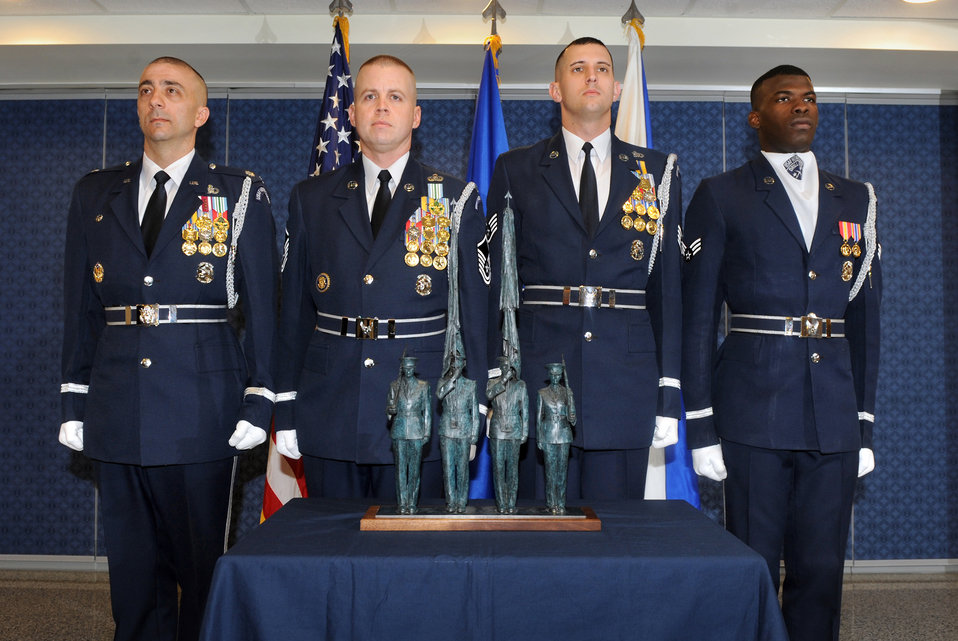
CSAF accepts honor guard statue

U.S. Air Force Honor Guard members from Joint Base Anacostia-Bolling, D.C., stand at attention during an April 13, 2012, Pentagon ceremony in which Air Force Association Chairman of the Board of Directors Sandy Schlitt presented the Air Force with a replica of the honor guard statue at the Air Force Memorial. Air Force Chief of Staff Gen. Norton Schwartz accepted the statuette on behalf of the service. The honor guard members are, from left, Lt. Col. Ken Marentette, Master Sgt. Matthew Lewis, Staff Sgt. Jesse Schierloh and Senior Airman Billy Degraffenreid.